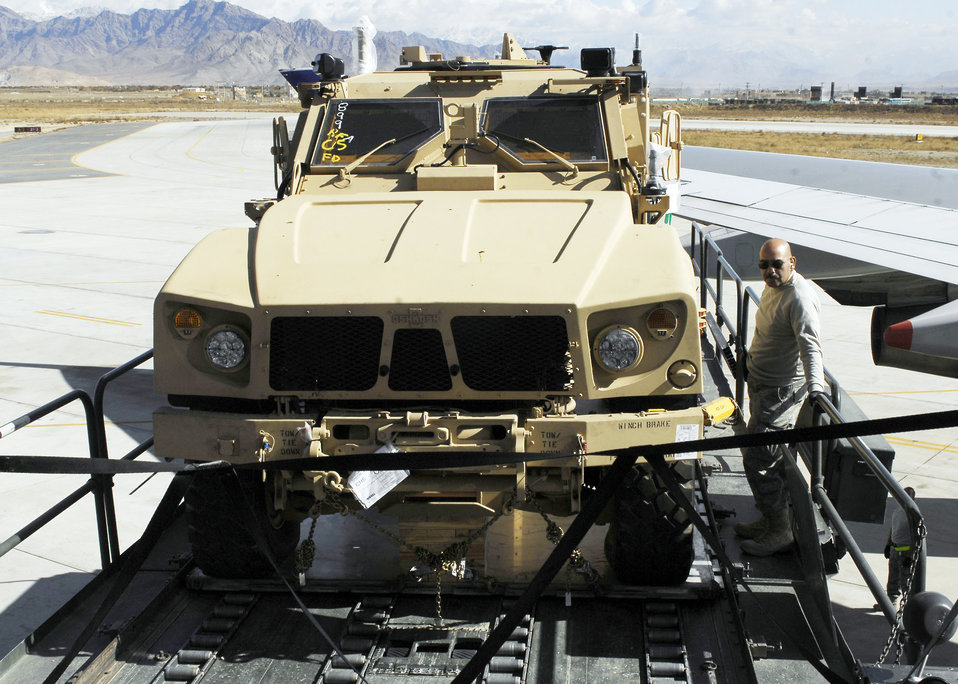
Bagrams new arrivals

Master Sgt. Andrew Garcia stands next to a mine-resistant ambush-protected all-terrain vehicle making sure it doesn't move, while the K-loader lowers it to the ground Nov. 9, 2009, at Bagram Airfield, Afghanistan. Sergeant Garcia is a ramp section supervisor from the 455th Expeditionary Aerial Port Squadron.